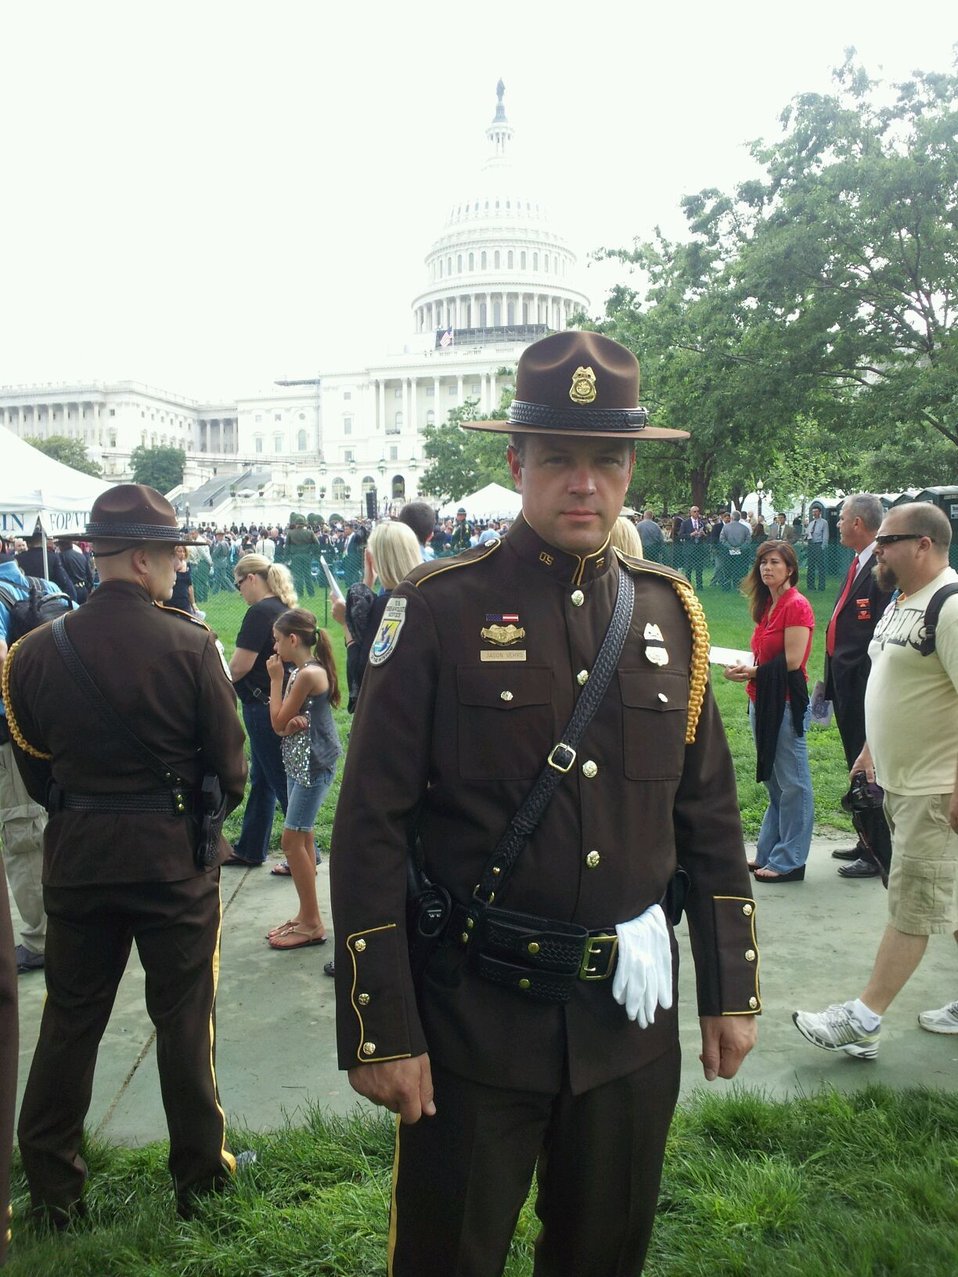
Officer Jason Vehrs

Jason Vehrs, shown here in his Refuge System Honor Guard uniform, is a wildlife officer at Wheeler National Wildlife Refuge in Alabama and nearby refuges. He credits his dad, Stephen Vehrs, for instililling his passion for protecting conservation lands.